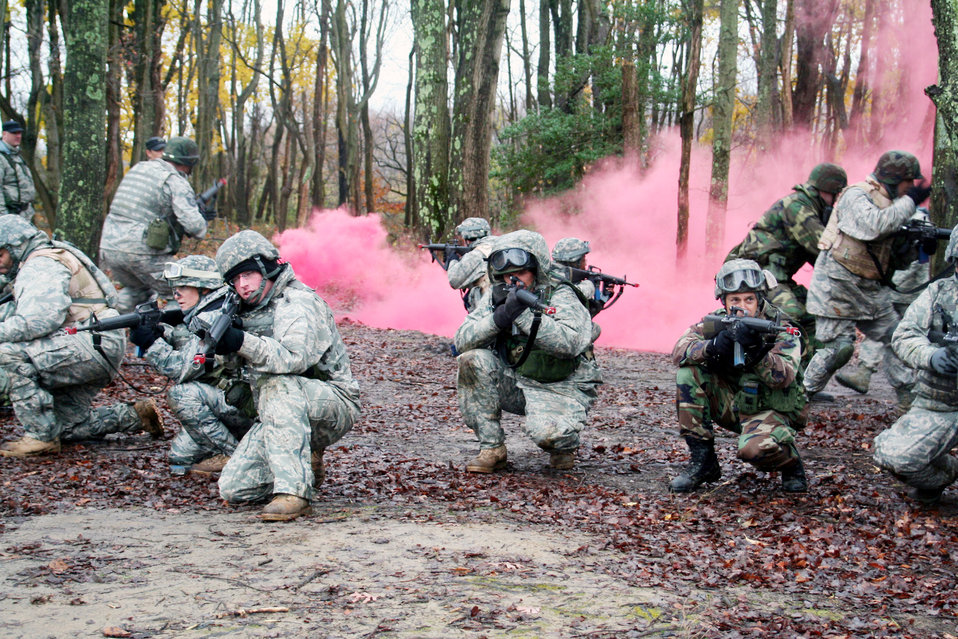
Deploying Airmen practice patrol tactics

Students in the Combat Airman Skills Training Course use a smoke diversion tactic while practicing patrol maneuvers Nov. 12, 2009, on a range at Joint Base McGuire-Dix-Lakehurst, N.J. Airmen from the 421st Combat Training Squadron teach the course to prepare Airmen for upcoming deployments. The squadron is assigned to the U.S. Air Force Expeditionary Center.